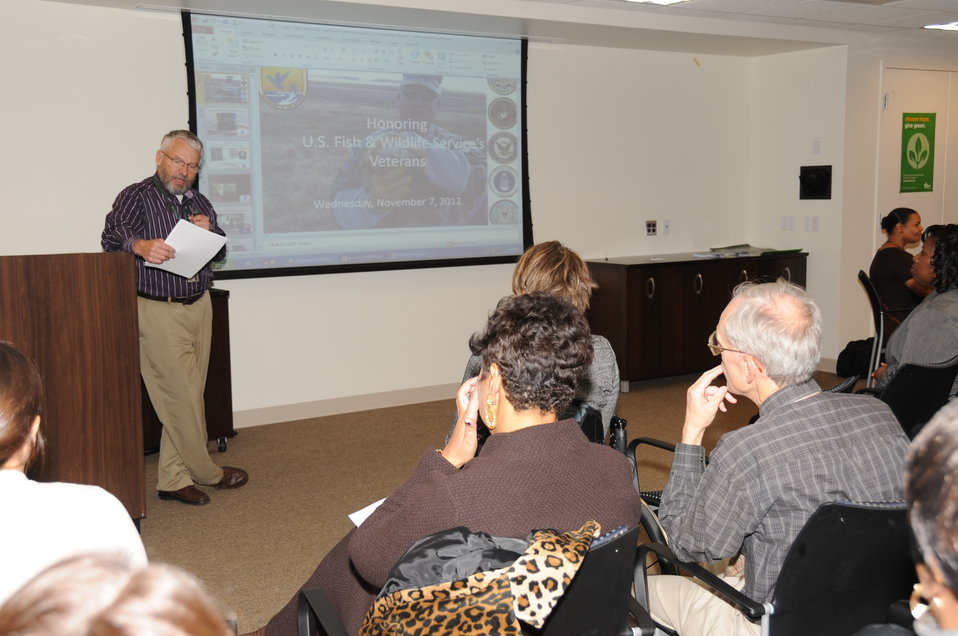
Honoring and Celebrating our Veterans

11.07.2012 Employees gathered in the Arlington Office to honor FWS Veterans